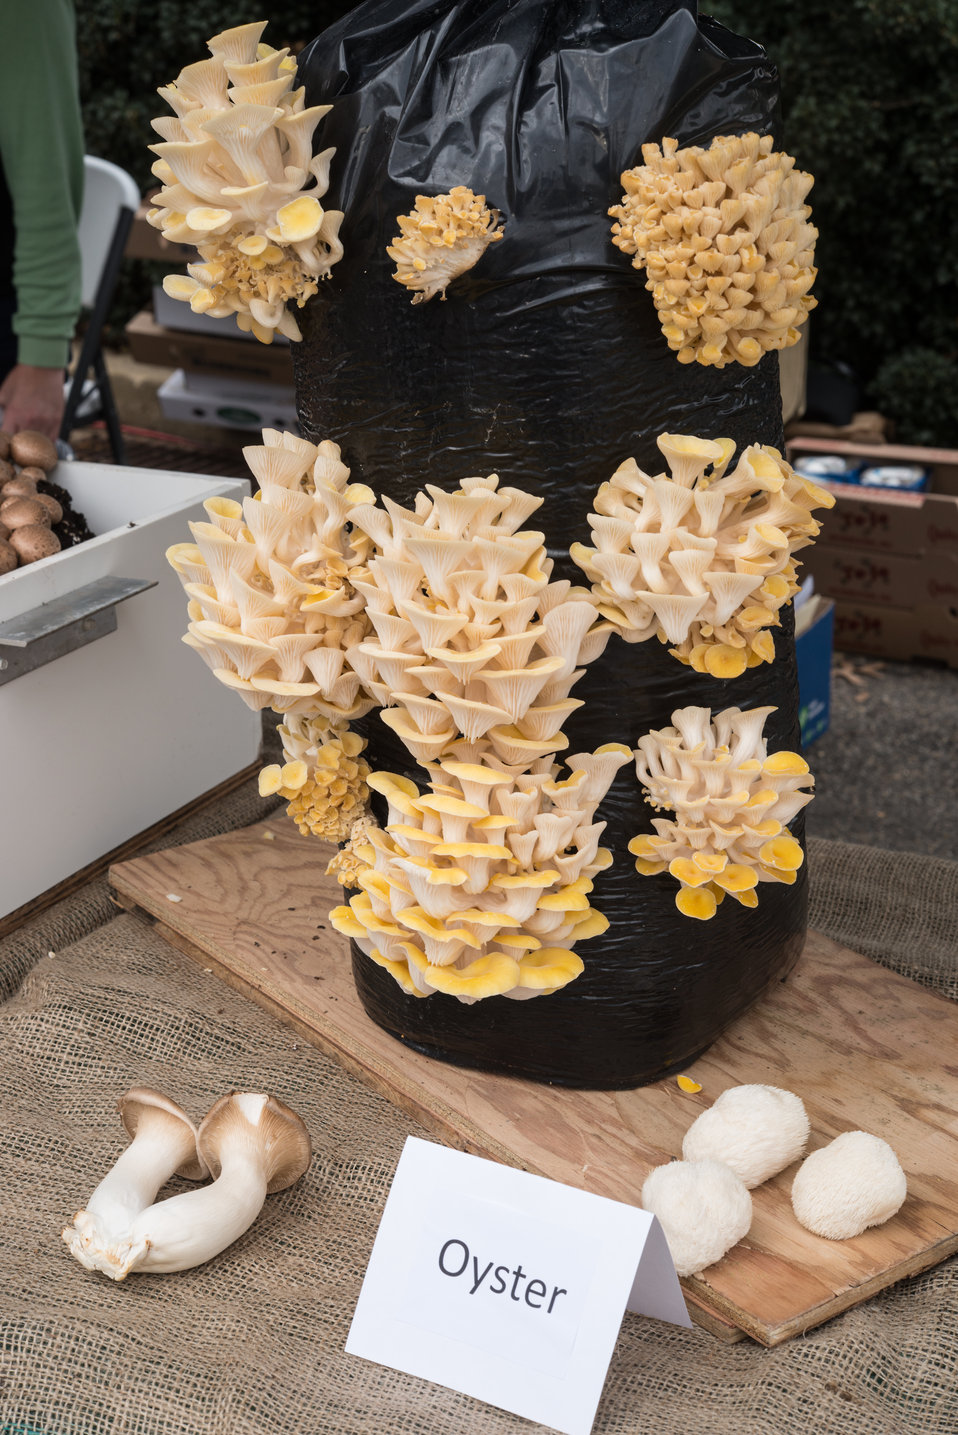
Yellow oyster (yellow and white), growing from a black plastic wrapped sawdust growing log, on display at the U.S. Department of Agriculture (USDA) farmers markets and Harvest Festival at the USDA Whitten Building east parking lot in Washington, DC, on Friday, November 22, 2013.